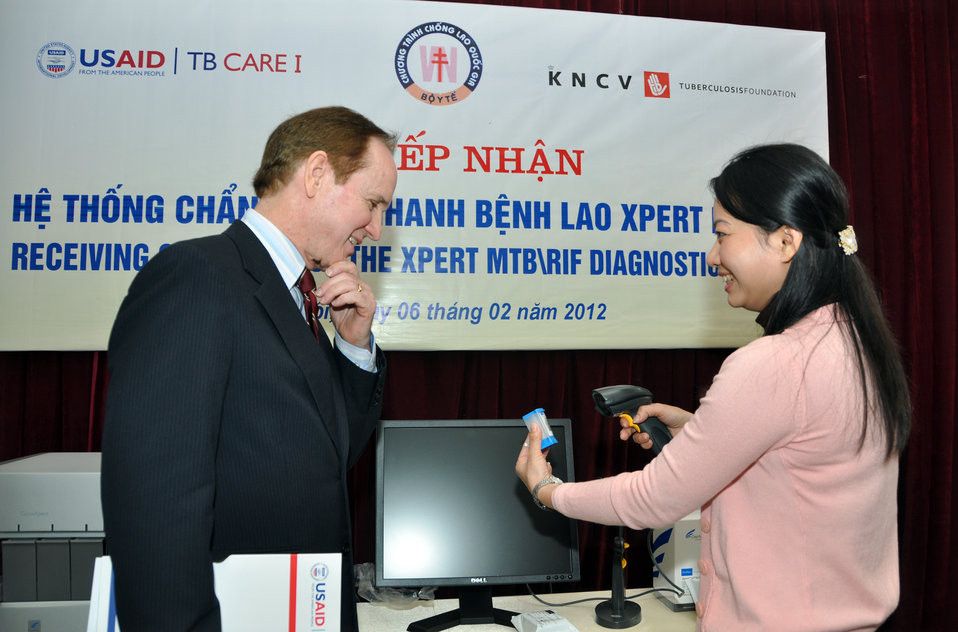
USAID Mission Director Francis Donovan learns how the equipment functions

USAID delivers TB and MDR-TB diagnostic equipment